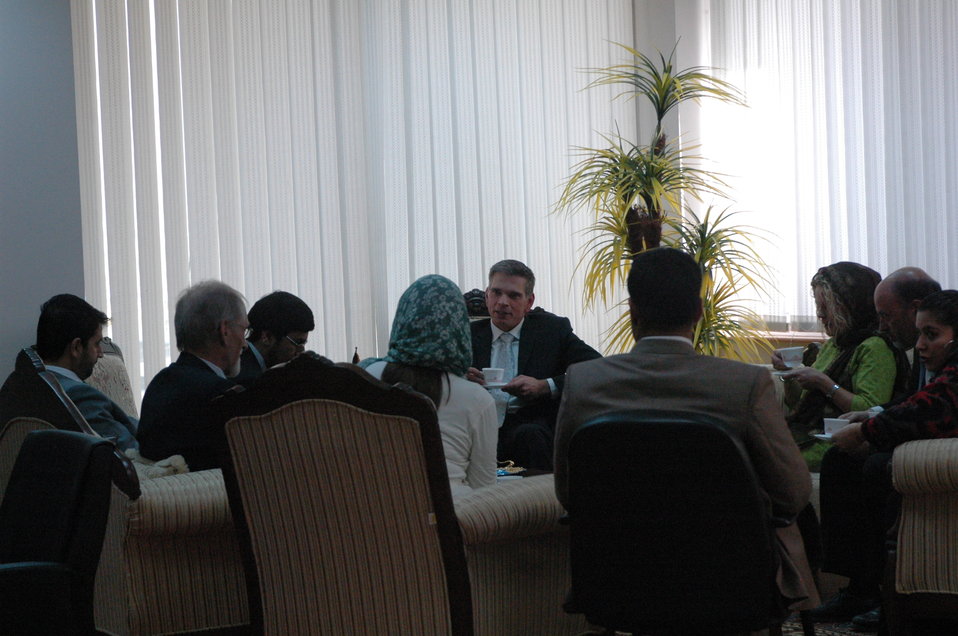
Community Based Stabilization Grants Ceremony, December 7, 2010